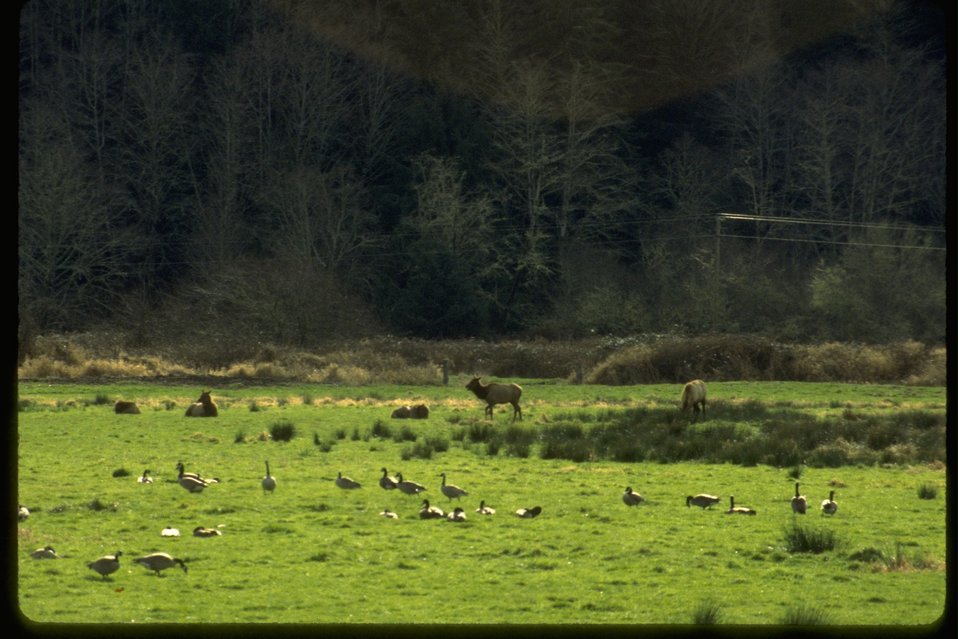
Cows and Geese at Dean Creek.